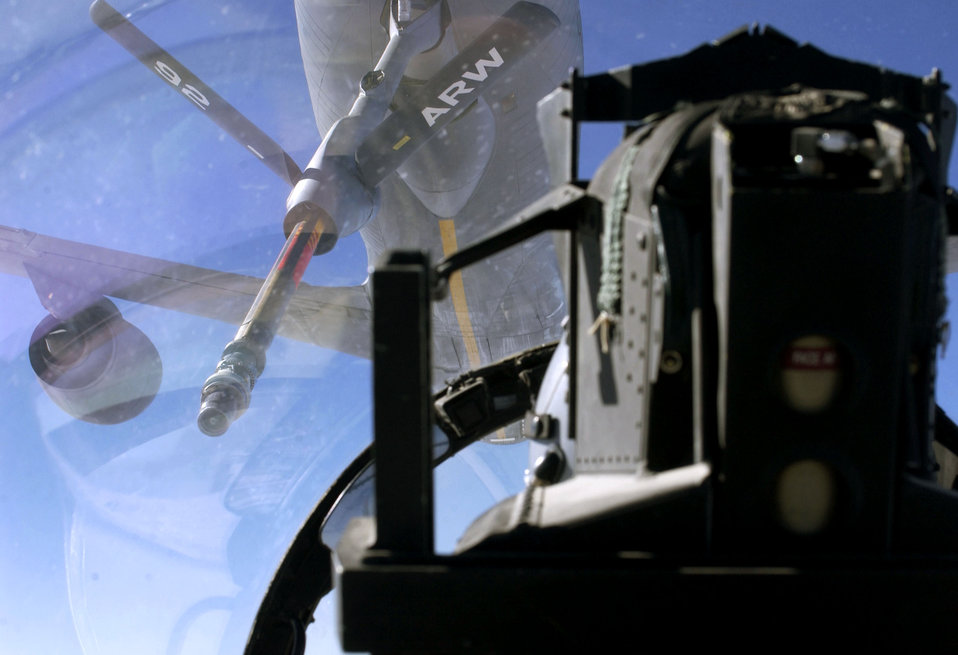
Tanker contract award announced

OPERATION IRAQI FREEDOM -- A KC-135 Stratotanker from the 340th Expeditionary Air Refueling Squadron prepares to refuel to an F-15E Strike Eagle over the skies of Iraq during a mission Aug. 28.